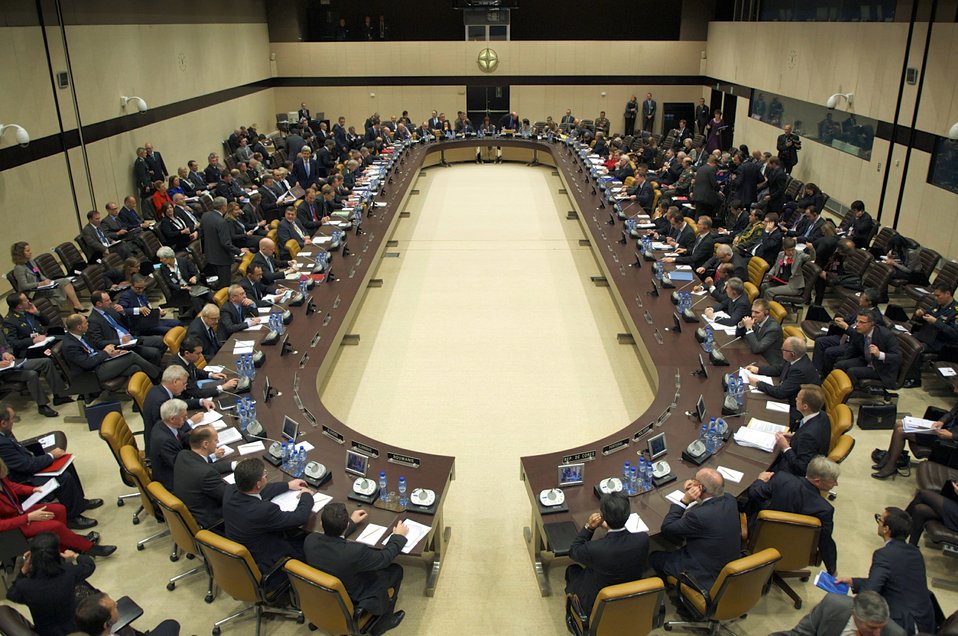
NATO Foreign Ministers and Non-NATO ISAF Contributing Nations Discuss the Security Situation in Afghanistan

NATO foreign ministers and Non-NATO Internal Security Assistance Force (ISAF) Contributing Nations discuss the current and future security situation in Afghanistan during the ISAF meeting at NATO headquarters in Brussels, Belgium, on December 4, 2013.